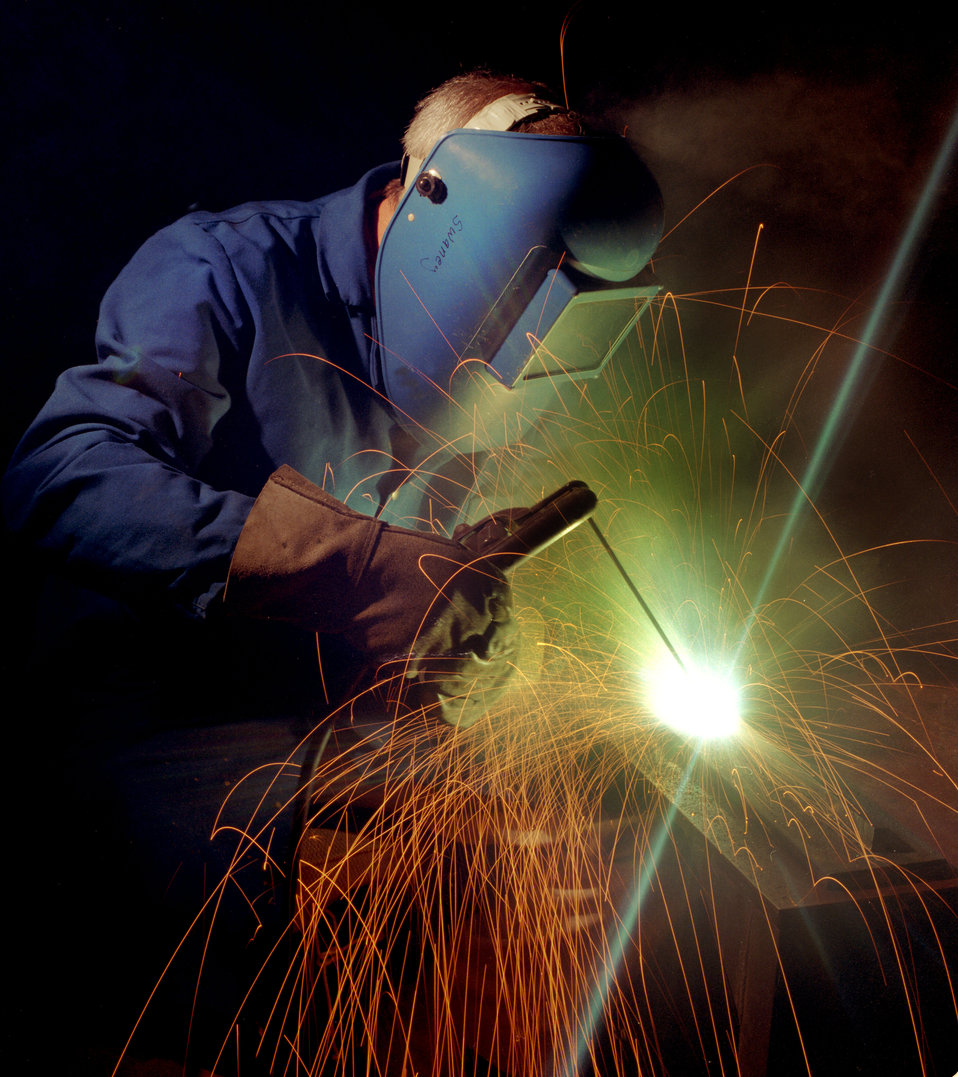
Welding at Oak Ridge National Lab

YP7039WE DOE photo by Lynn Freeny

Welding at Oak Ridge National Lab Oak Ridge Tennessee 12/12/1988